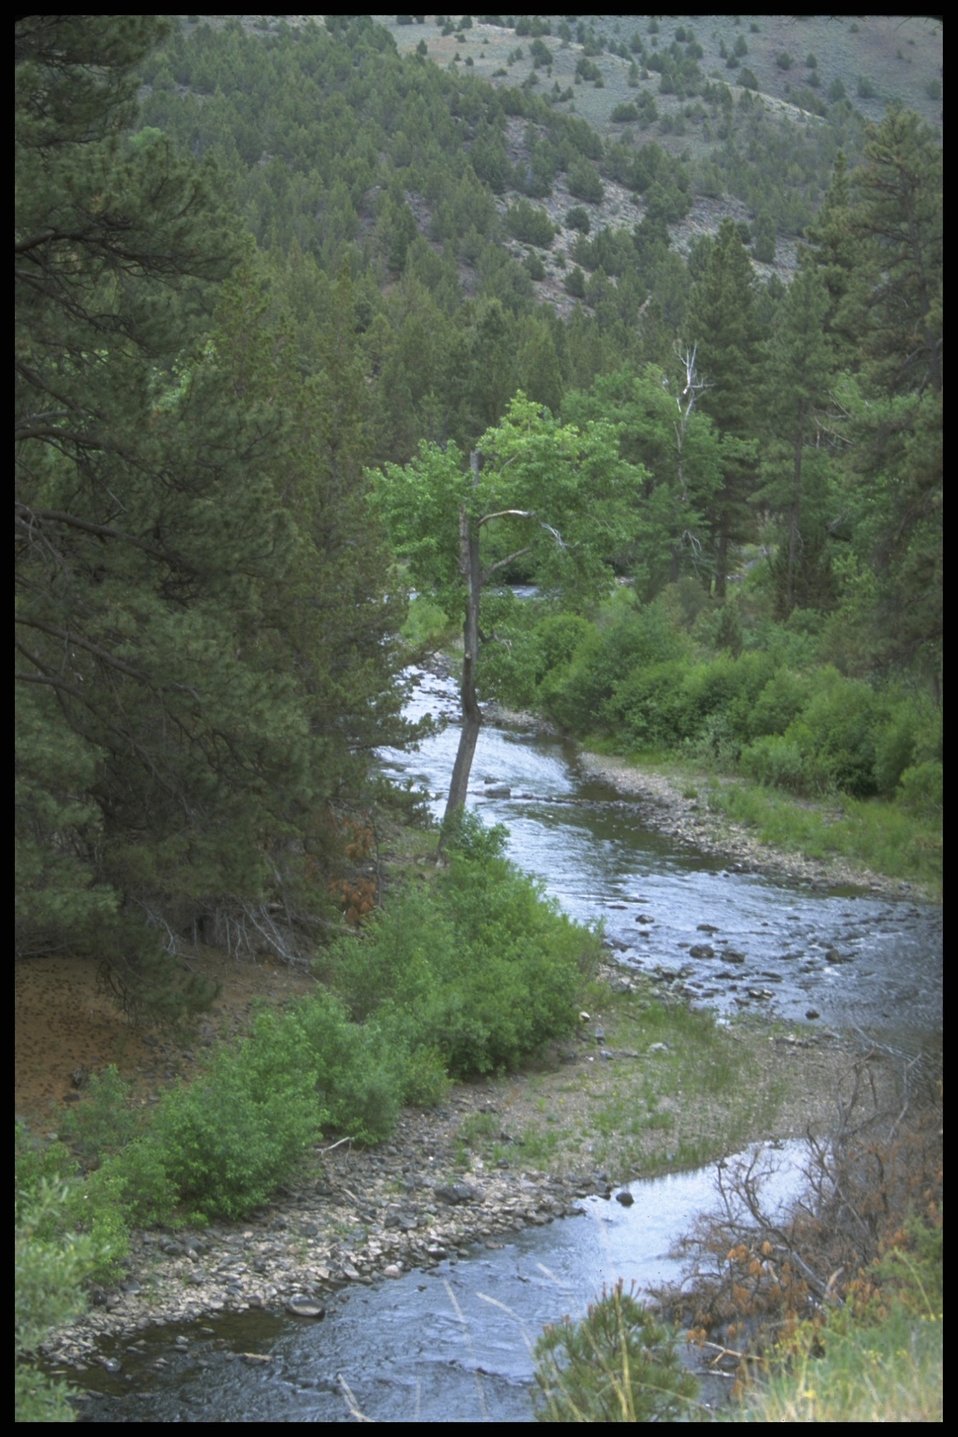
Chewaucan River, Lakeview District.